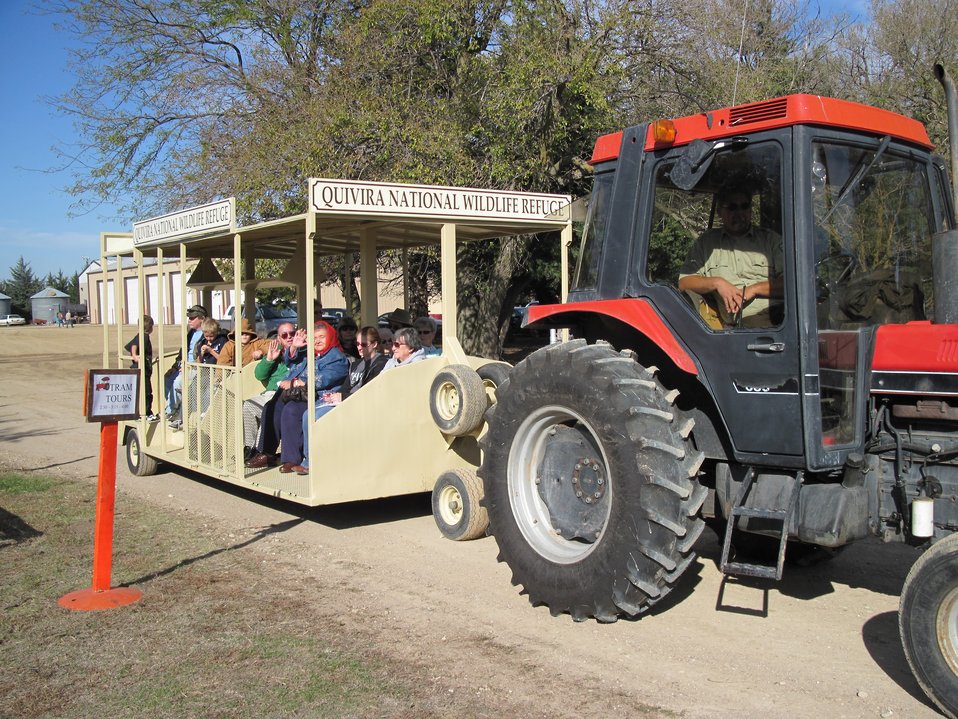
Tour of Quivira National Wildlife Refuge

Quivira NWR in Kansa provides its visitors with a guided tour during the summer months.